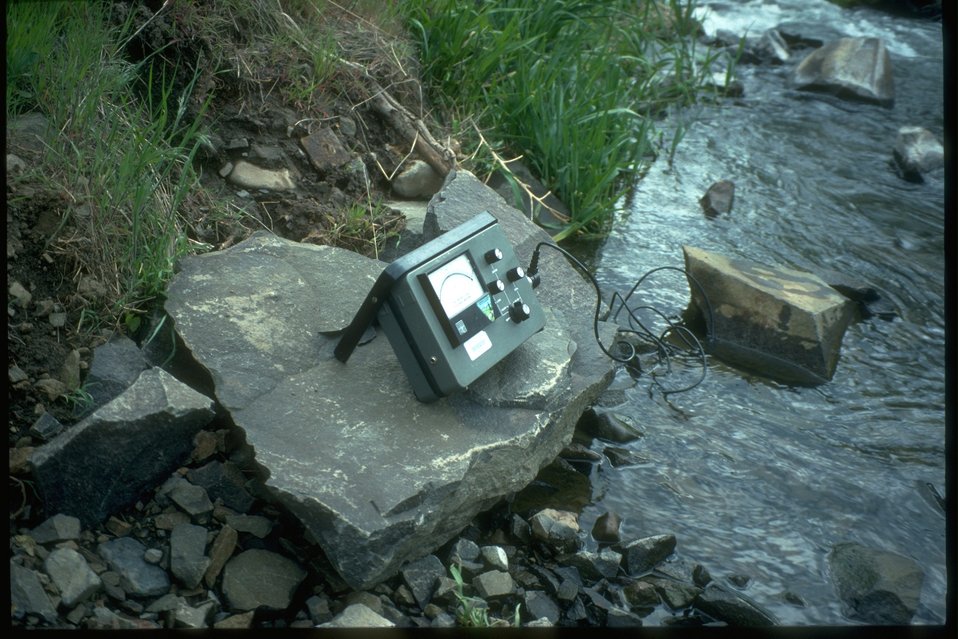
Stream flow measuring equipment at Douglas Creek.